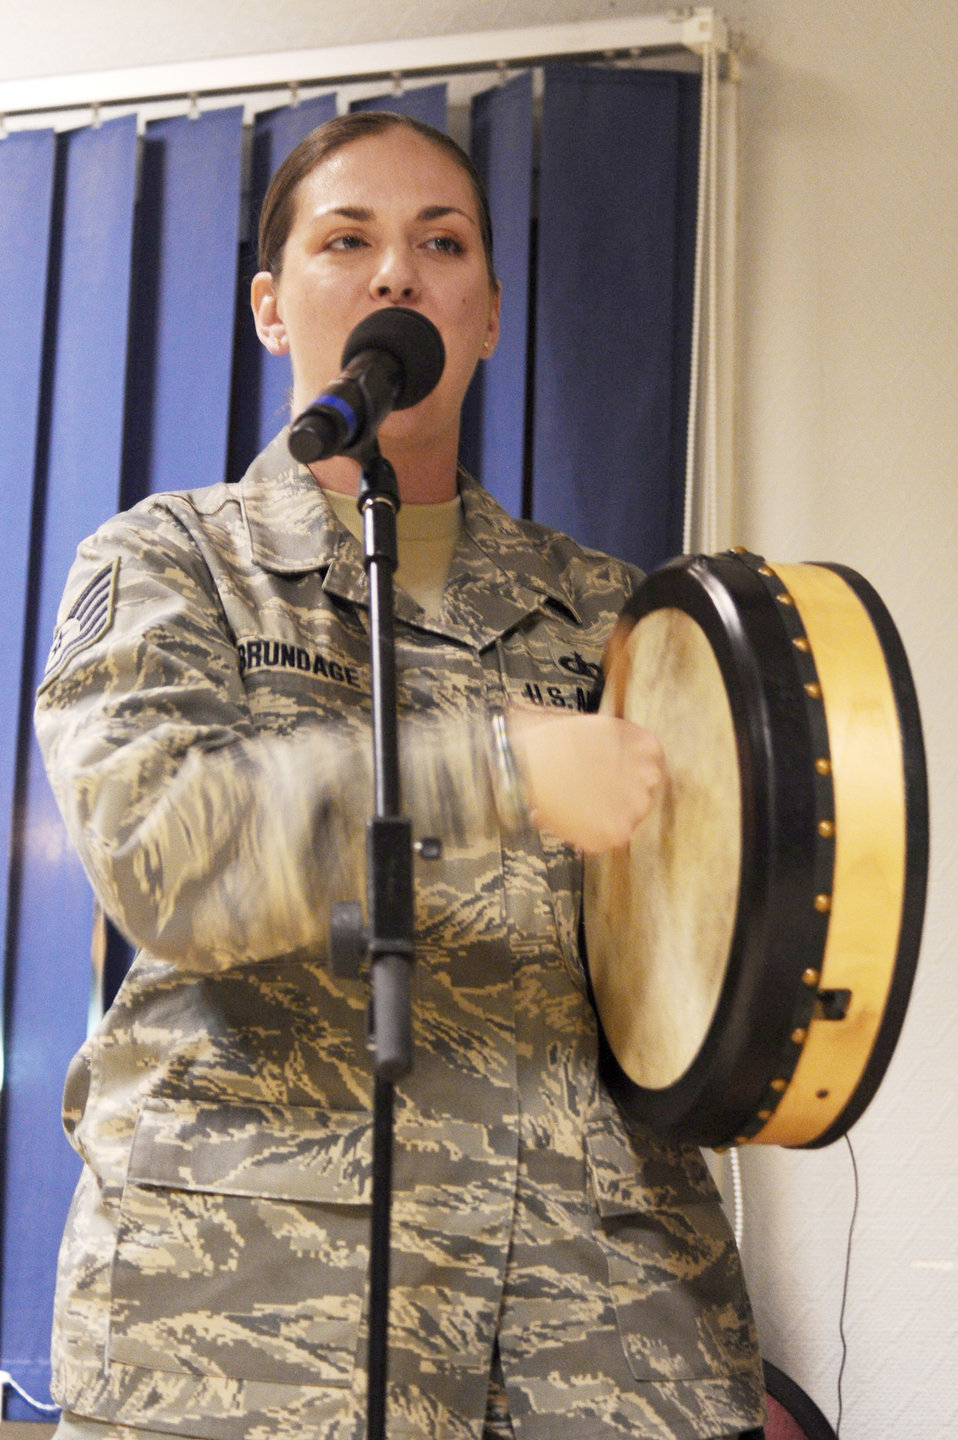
'Celtic Aire' performs in Southwest Asia

Vocalist Tech. Sgt Julia Brundage plays a bodhran during a performance with